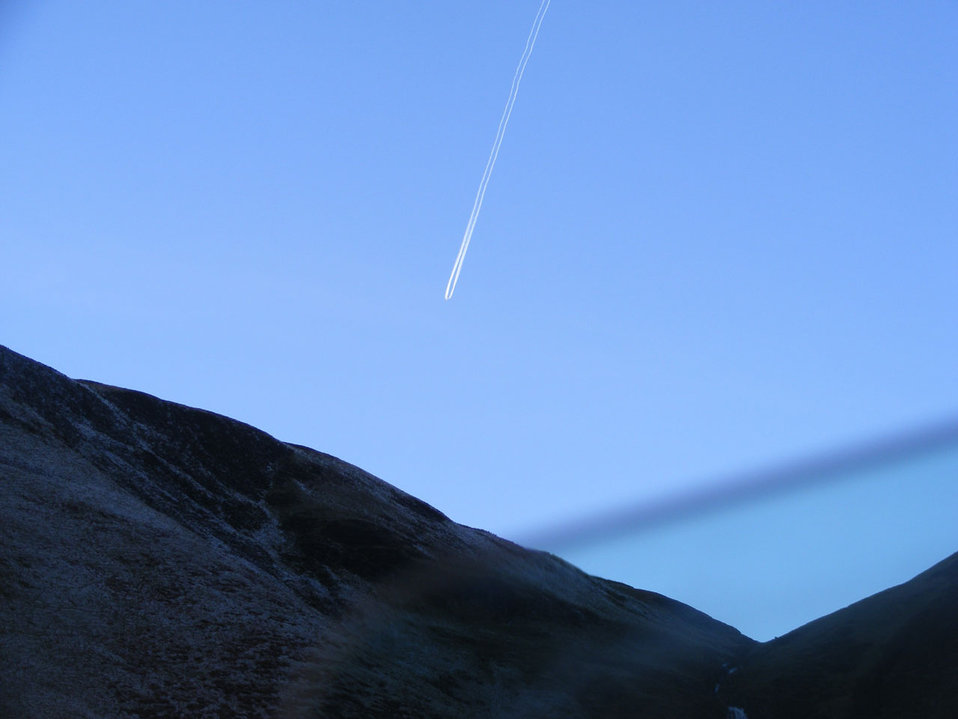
Aurevoire

Aircraft at high altitude.